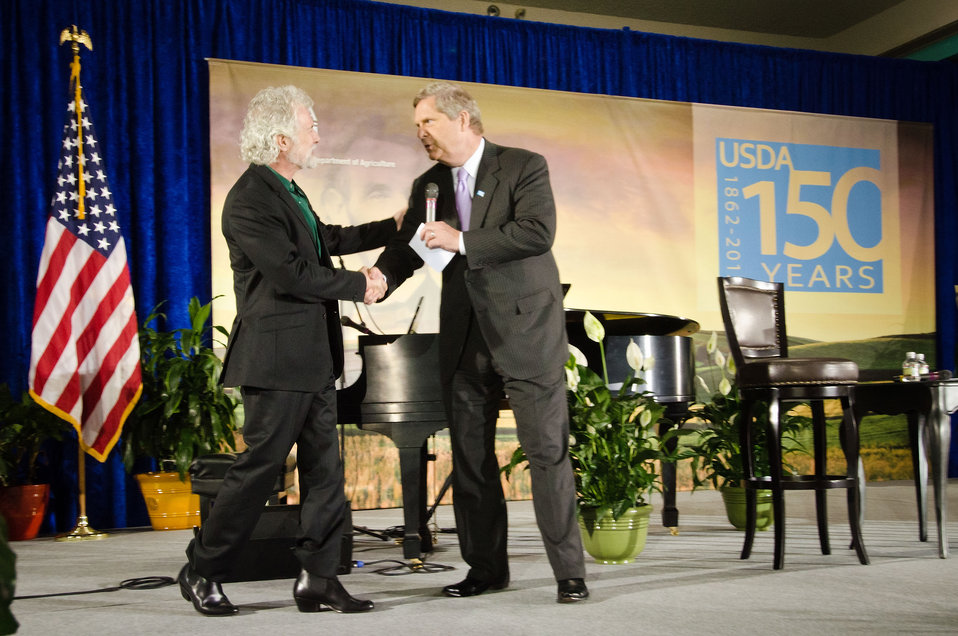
Agriculture Secretary Tom Vilsack (right) thanks Chuck Leavell (left) Rolling Stones keyboardist, conservationist and Georgia tree farmer for his dedication to American Agriculture and conservation. Leavell treated the audience with songs during ceremonies for the United States Department of Agriculture’s 150th Anniversary celebration in Washington, D.C., Tuesday, May 15, 2012.